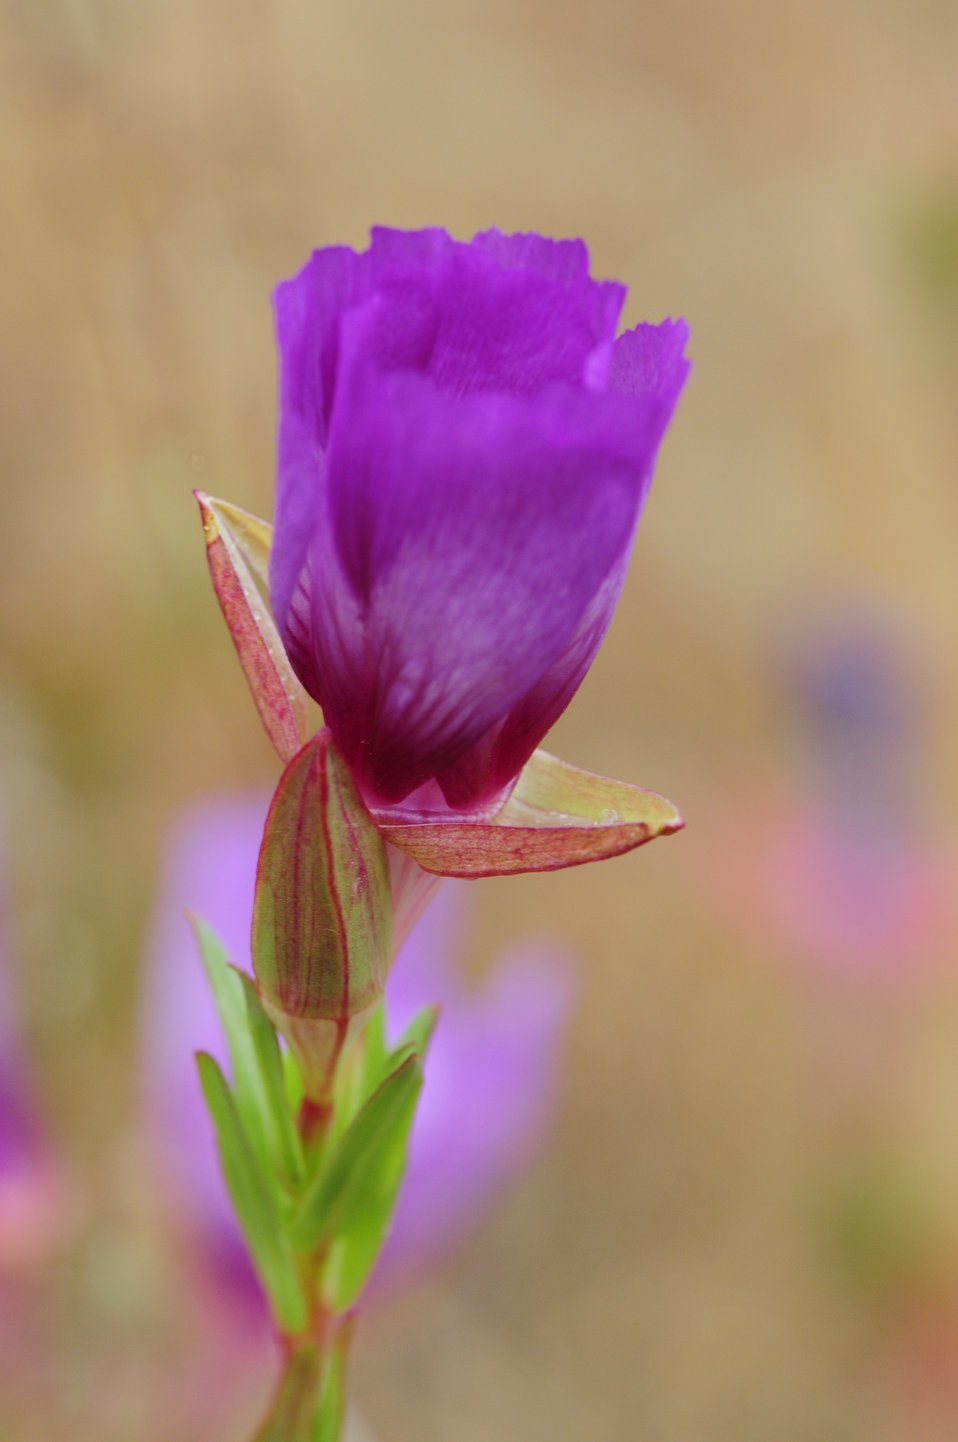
Vine Hill clarkia